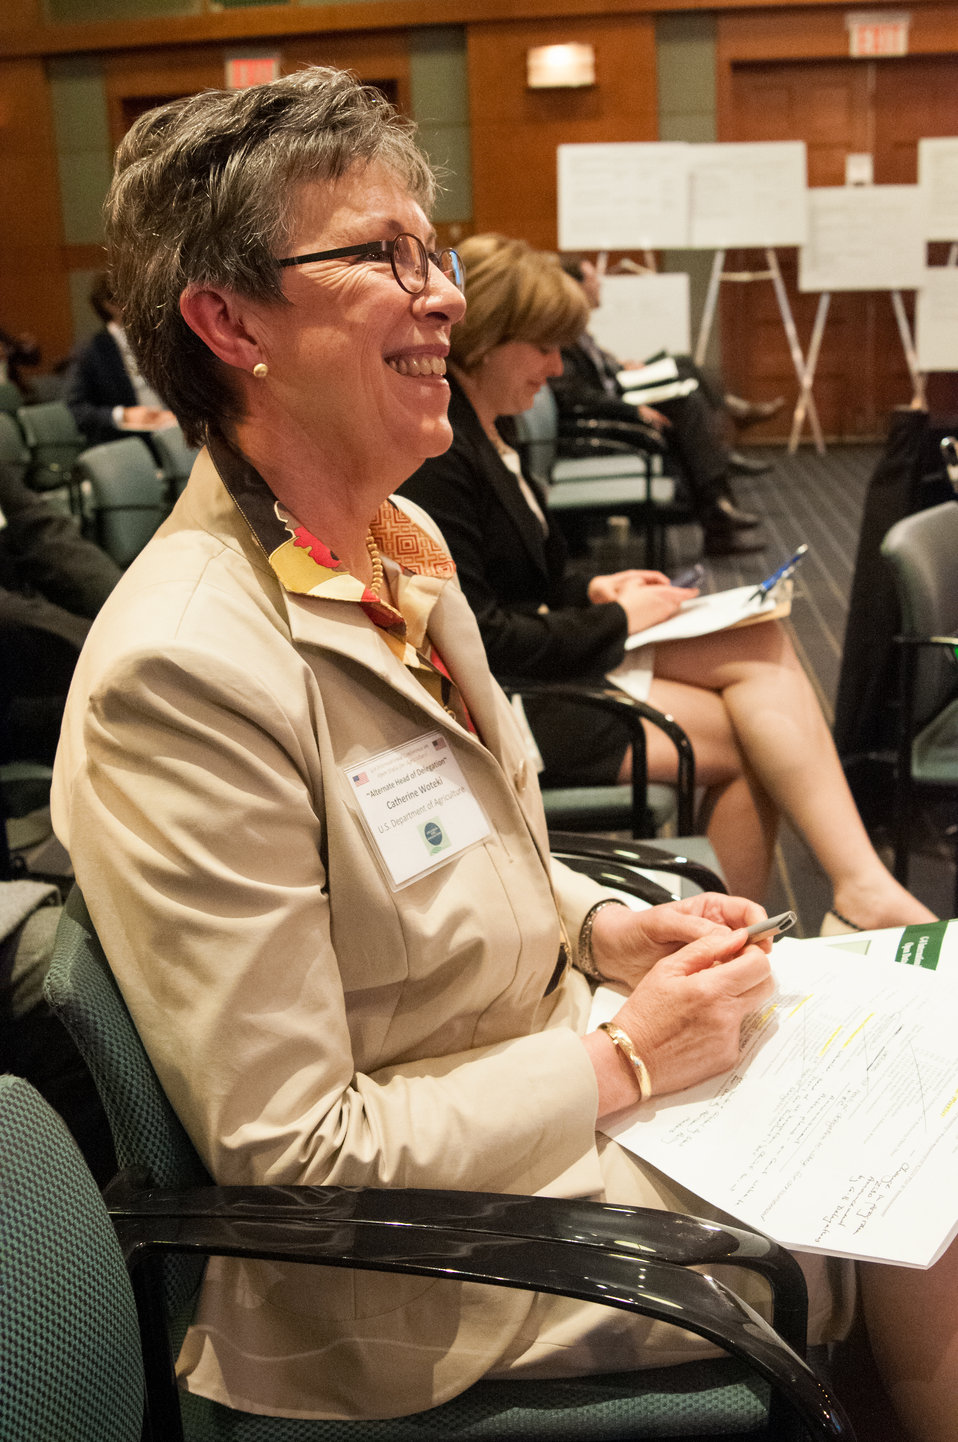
Agriculture Under Secretary Research, Education and Economics (REE), Host and Mistress of Ceremonies Dr. Catherine Woteki responds with a smile to a comment made by one of the panelists during the second day of the two day G-8 International Conference on Open Data for Agriculture in Washington, D.C. on Tuesday, Apr. 30, 2013. The conference launched a new 'virtual community' of Food, Agriculture, and Rural data on Data.gov-the U.S. Government's data sharing website-to catalogue America's publicly available agricultural data and increase the ability of the public to find, download, and use datasets that are generated and held by the Federal Government. The data community features a collection of more than 300 newly cataloged datasets, databases, and raw data sources related to food, agriculture, and rural issues from agencies across the U.S. Government. In addition to the data catalog, the virtual community shares a number of applications, maps and tools designed to help farmers, scientists and policymakers improve global food security and nutrition.